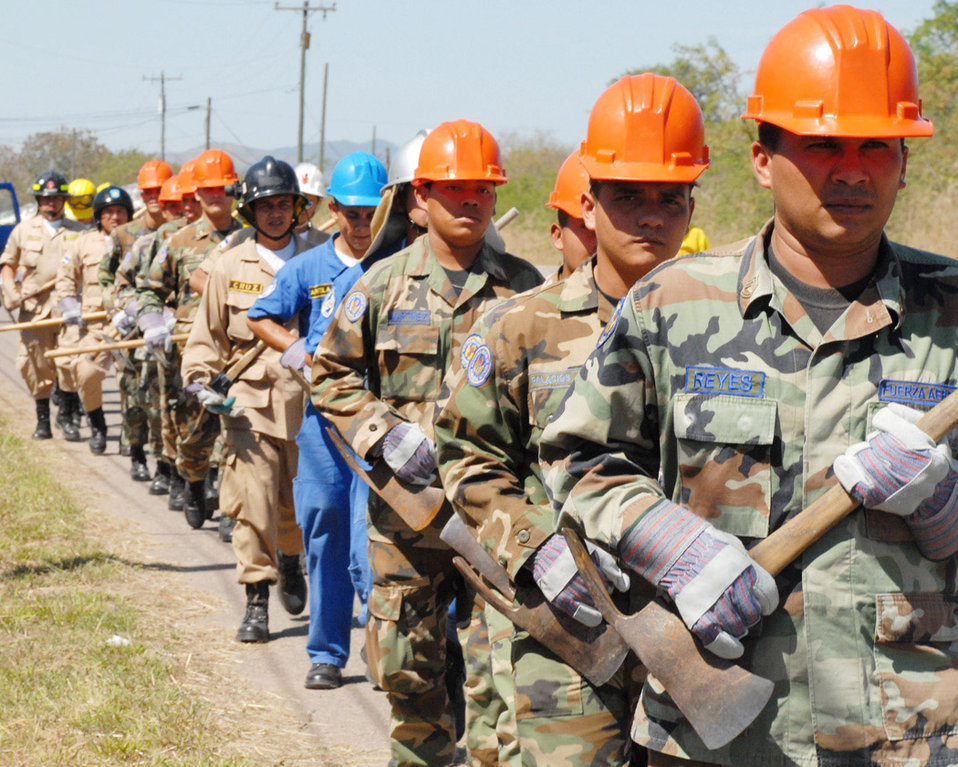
Firefighters exchange knowledge, experience

Honduran military and civilian firefighters march toward an area of Soto Cano Air Base, Honduras, to dig a fire break (a gap in vegetation or other combustible material that is expected to slow or stop the progress of a wildfire). The firefighters participated in a Joint Task Force-Bravo-sponsored firefighting subject matter expert exchange, a learning exposition for firefighters. During the exchange, a great level of importance is placed on land navigation and fighting wildfires. Hundreds of firefighters from fire departments across Honduras have participated in the exchange over the last two years.